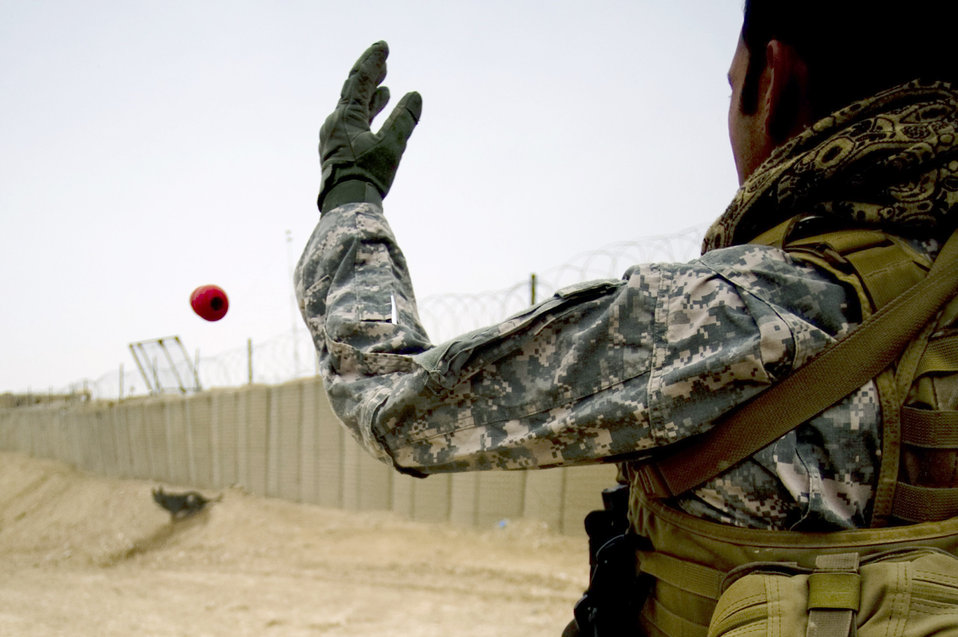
Bringing more bark to fight in Afghanistan

Army Spc. Joseph Lopez throws a chew toy to Edy Feb. 18, 2011, at Forward Operating Base Lagman, Afghanistan, after Edy successfully sniffed out explosive devices during an explosive device detection training session. Specialist Lopez is a military working dog handler, and Edy is a military working and patrol explosive detection dog assigned to Combined Team Zabul, Afghanistan. The team is composed of working dogs and dog handlers from the Air Force, Army and Navy who help support the various units at FOB Lagman during patrols and other various missions.